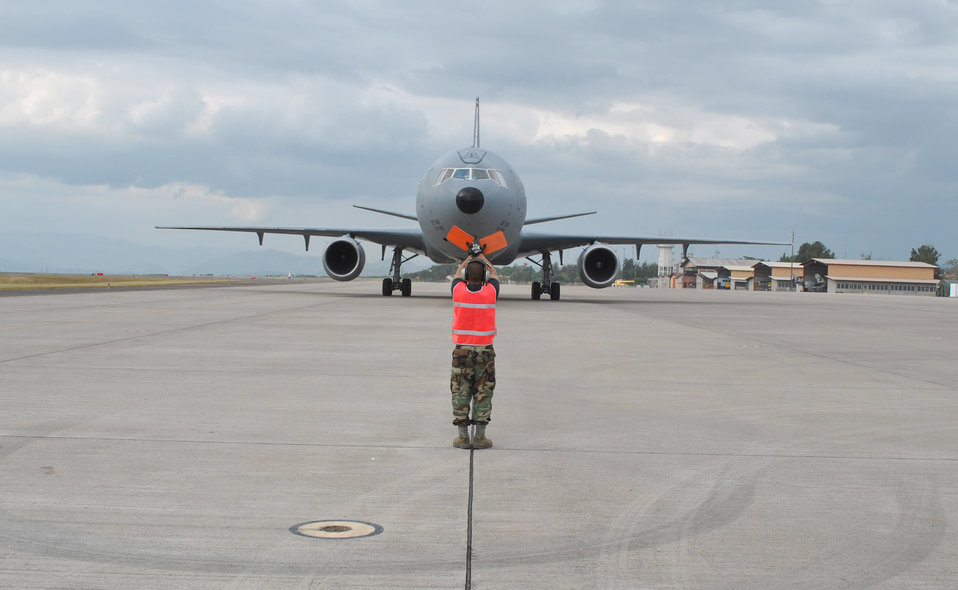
Soto Cano humanitarian

An Airman from the 612th Air Base Squadron Air Terminal Operations Center guides in a KC-10 Extender from Joint Base McGuire-Dix-Lakehurst, N.J., Oct. 25, 2010, at Soto Cano Air Base, Honduras. The aircraft delivered 18 tons of humanitarian supplies bound for local charities.